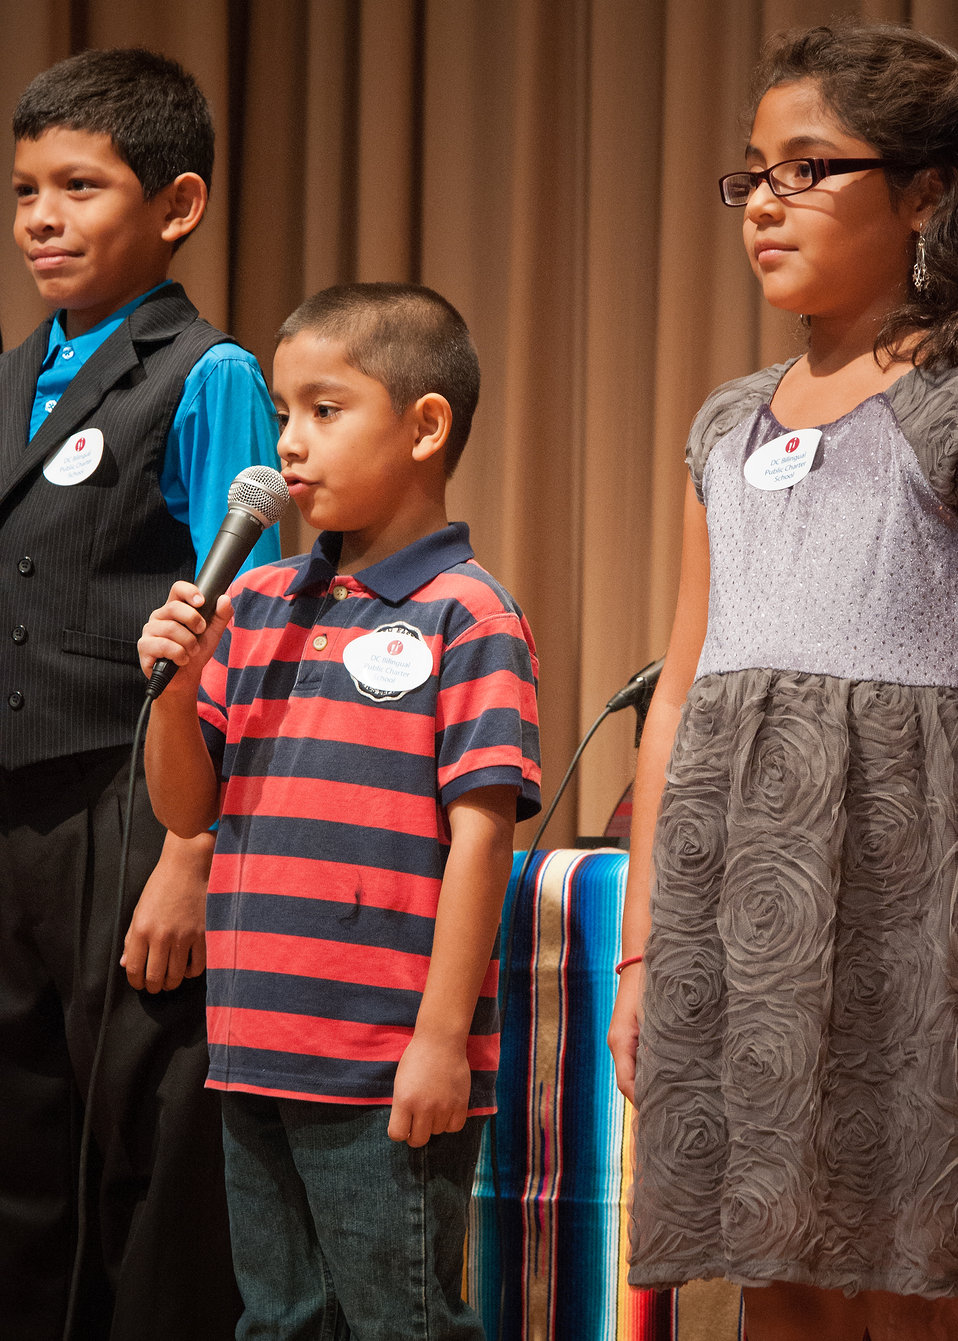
District of Columbia Bilingual Public Charter School student Bryan Henriquez speaks about the healthy and nutritional qualities at his school at the U. S. Department of Agriculture (USDA) 2012 Hispanic Heritage Month celebration in Washington, D.C. on Thursday Sept. 20, 2012.